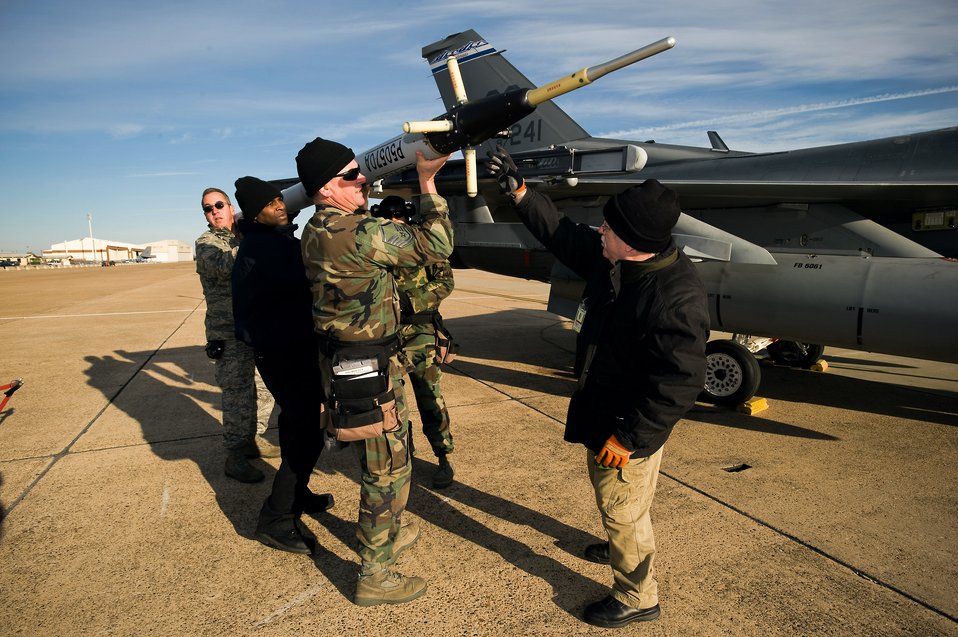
Swap out

Jesse Cummings guides the mounting of an air combat maneuvering instrumentation pod upon the wing of an F-16 Fighting Falcon Dec. 5 at Green Flag East at Barksdale Air Force Base, La. The ACMI pod transmits real-time 3D flight data that is superimposed over a moving map providing better situational awareness to the battlefield commander. Mr. Cummings is the site manager for Bering Sea Eccotech.